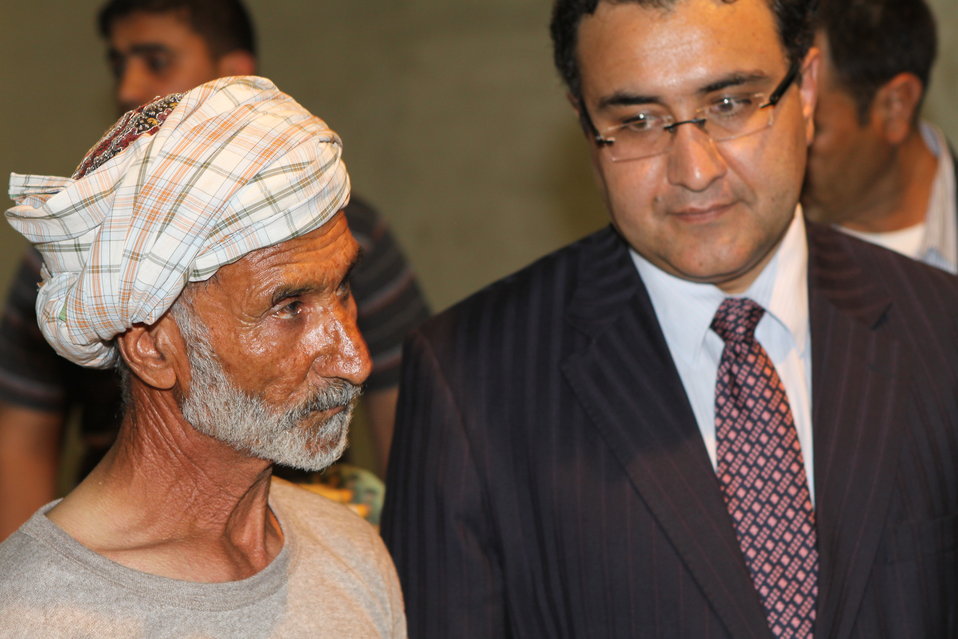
100525 Hirat Textile Company 765